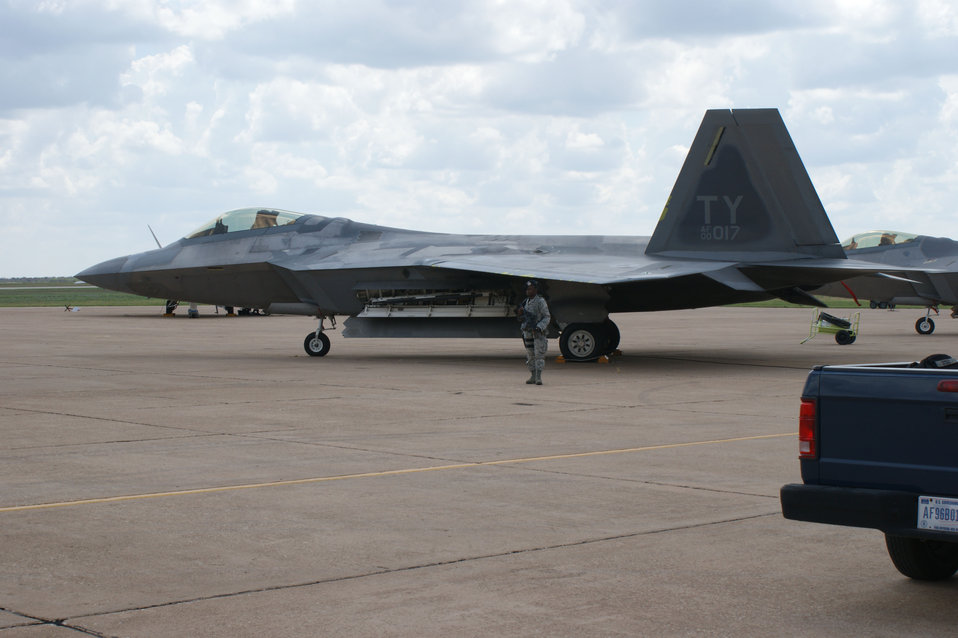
Hurricane Isaac Prep

Airman 1st Class Ronieiesha Baker, 82nd Security Forces Squadron, patrols the flightline Aug. 28, 2012 at Sheppard Air Force Base, Texas. F-22 Raptors from Tyndall Air Force Base, Fla., were evacuated to Sheppard as a precautionary measure in advance of Hurricane Issac.